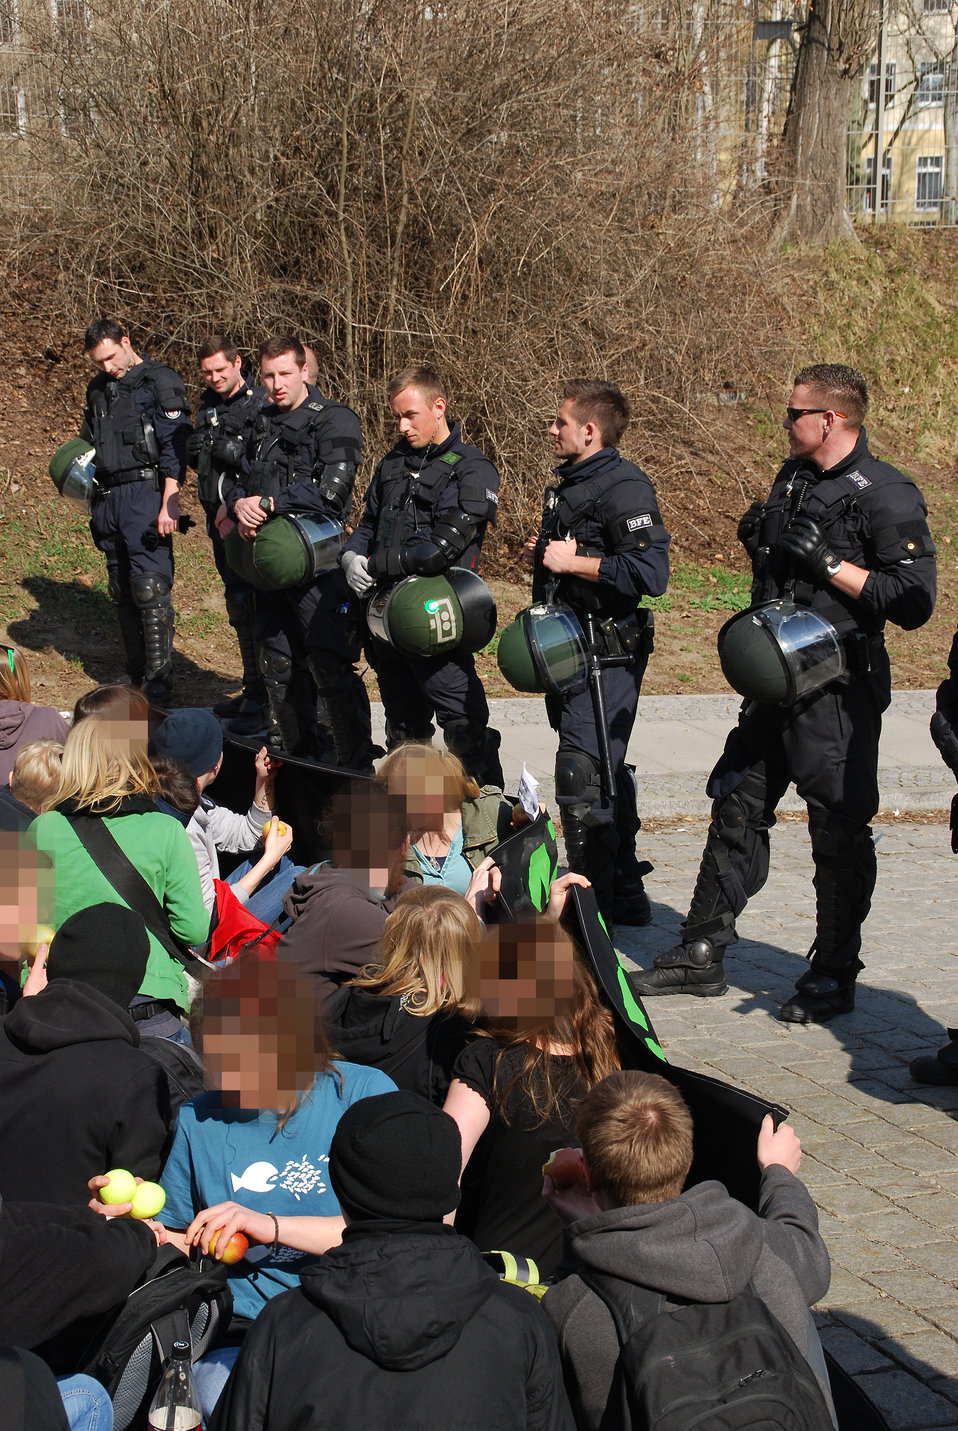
Proteste gegen den Nazi-Aufmarsch am 24.3.2012 in Frankfurt (Oder)